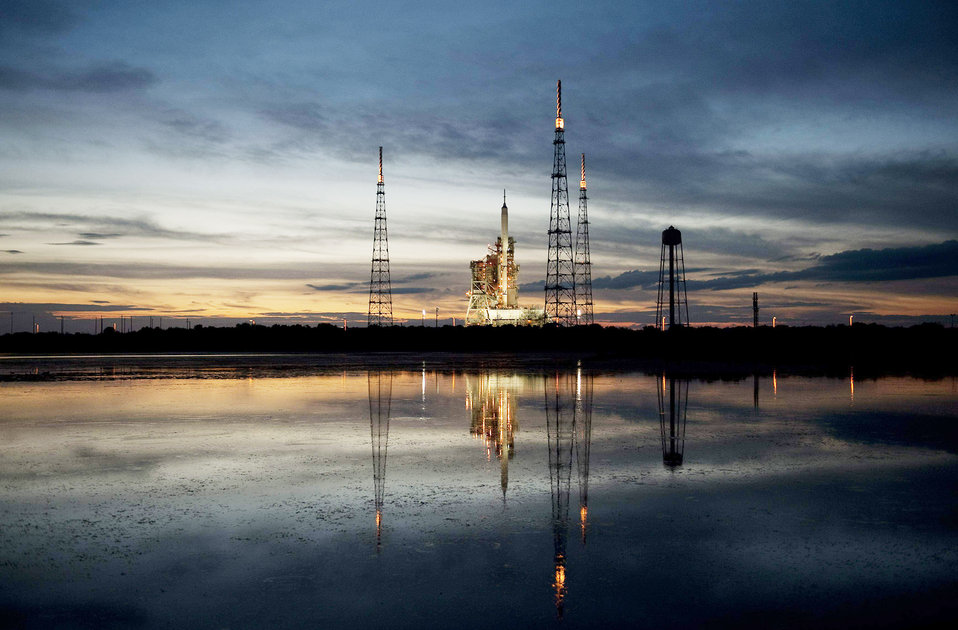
Ares I-X test rocket launched

NASA's Ares I-X rocket is seen on Launch Pad 39B at the Kennedy Space Center in Cape Canaveral, Fla.,while awaiting its approaching liftoff. The rocket was launched on Oct. 28, 2009. The flight test of Ares I-X will provide NASA with an early opportunity to test and prove flight characteristics, hardware, facilities and ground operations associated with the Ares I.